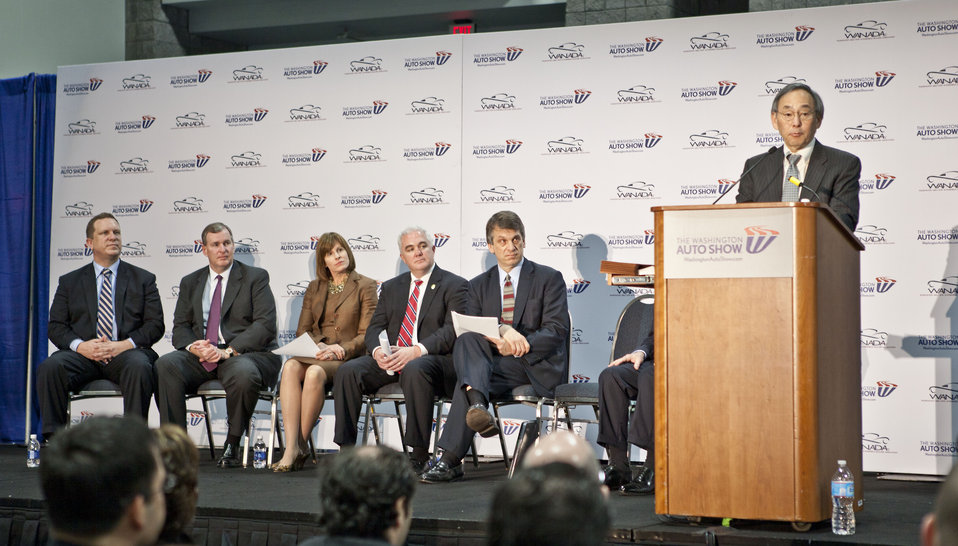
Energy Secretary Steven Chu announces the new Workplace Charging Challenge, a collaborative effort to increase the number of U.S. employers offering workplace charging tenfold in the next five years.